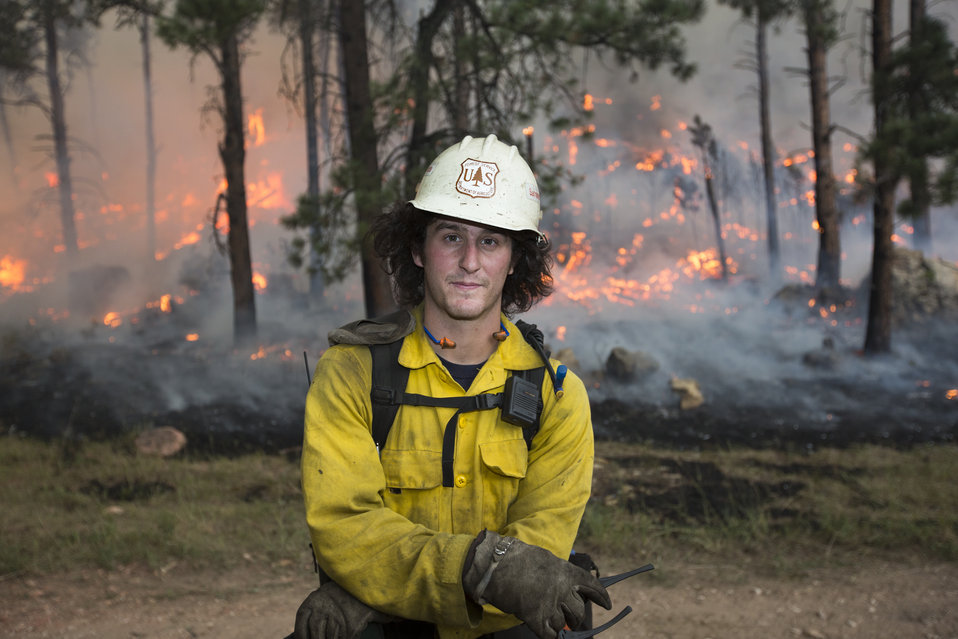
Sacramento, NM Interagency Hotshot Crew (IHC) member Dan Locicero fights the Myrtle Fire in Black Hills National Forest, SD on July 22, 2012. The Sacramento Interagency Hotshot Crew (IHC) are a group of multi-skilled professional wild land firefighters specifically trained, organized, and equipped for rapid response to wildfire situations. The Sacramento IHC specialty is wildfire suppression, but is sometimes assigned other jobs, including search and rescue and disaster response assistance. When not busy fighting fires the Sacramento IHC work to meet resource goals on their home forest lands through thinning, prescribed fire implementation, habitat improvement or trail construction projects.